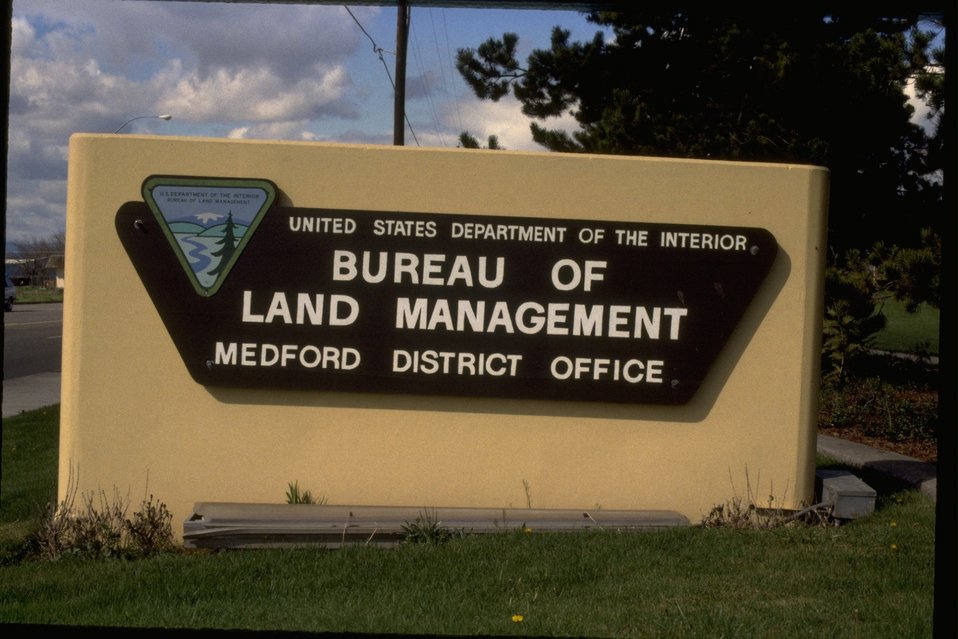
Medford District front sign.